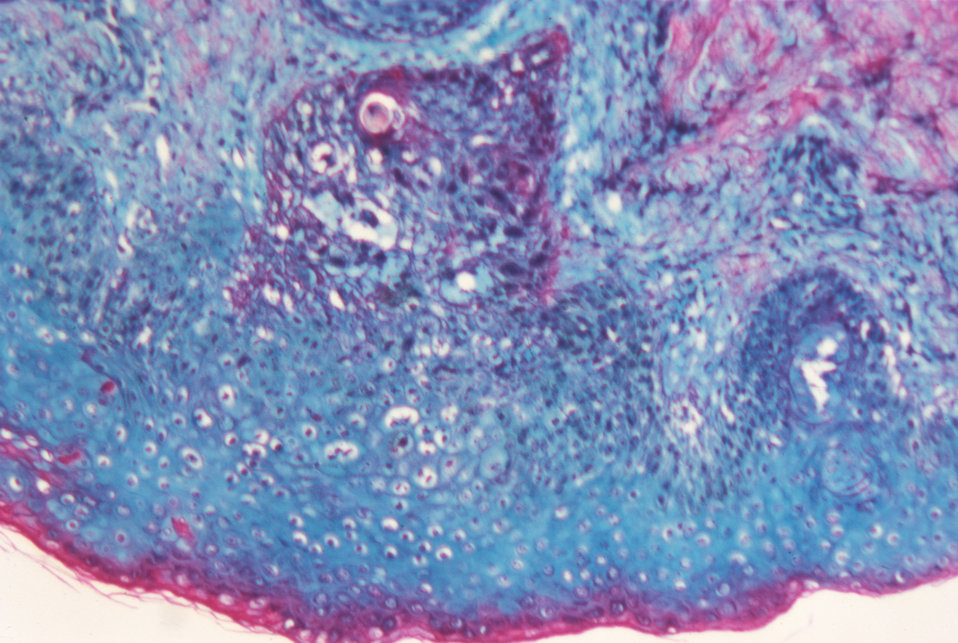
This micrograph reveals the histologic changes in human skin that has been infected with the smallpox variola virus.